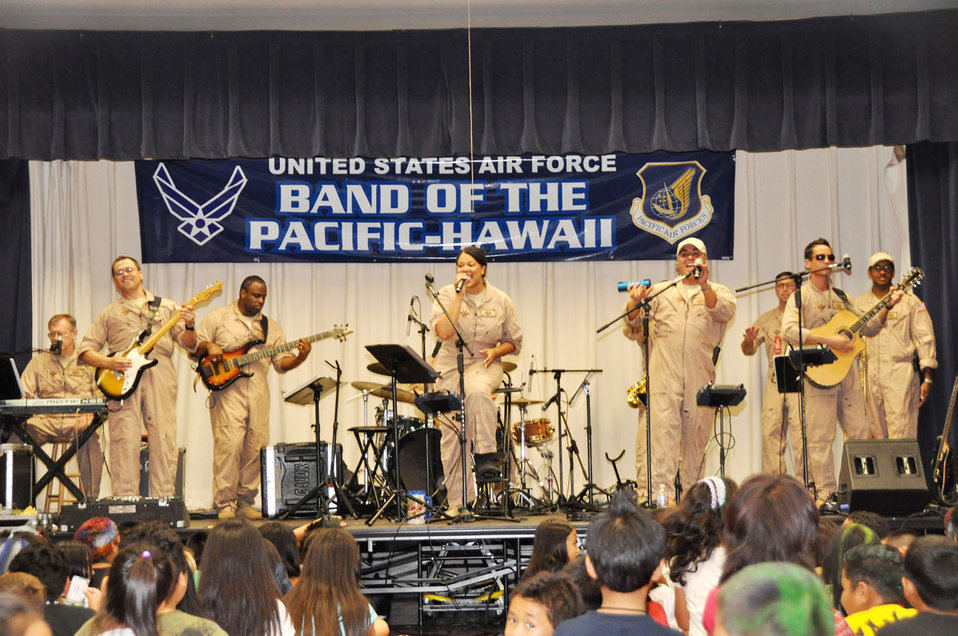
Band of the Pacific-Hawaii participates in Red Ribbon Week

Band of the Pacific-Hawaii members perform at Kaleiopuu elementary School Oct. 22, 2009, in Waipahu, Hawaii. The band peformed as part of Red Ribbon Week that is aimed at reinforcing children's decisions to stay away from drugs and make positive decisions in life.